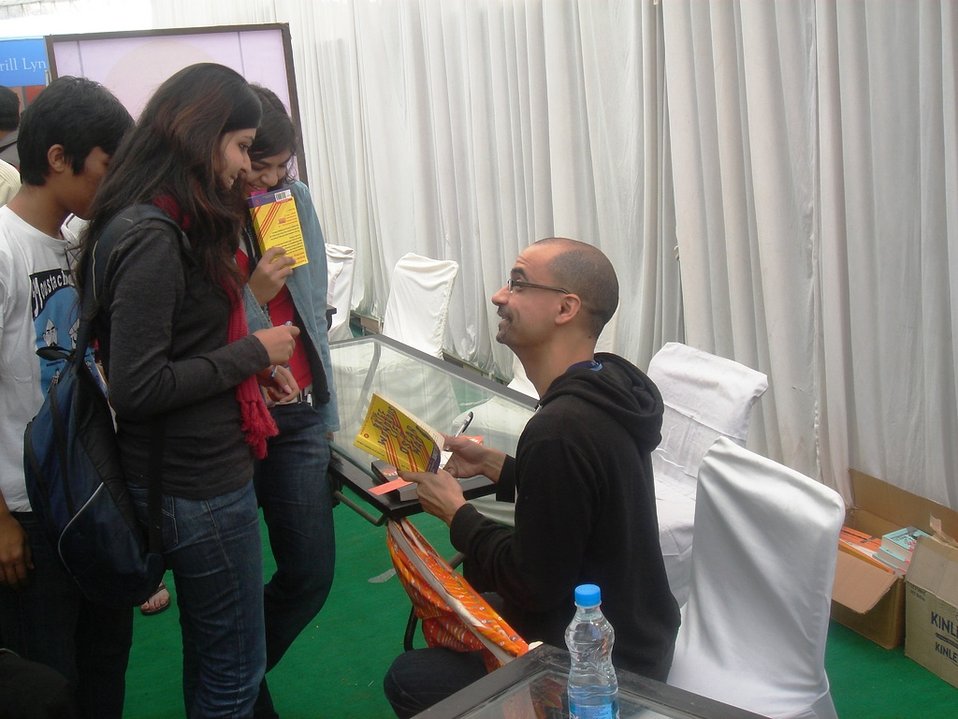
Pulitzer Prize-winning novelist and short story writer Richard Ford speaks with a fan at the Jaipur Literature Festival in Jaipur, India, in January 2011.